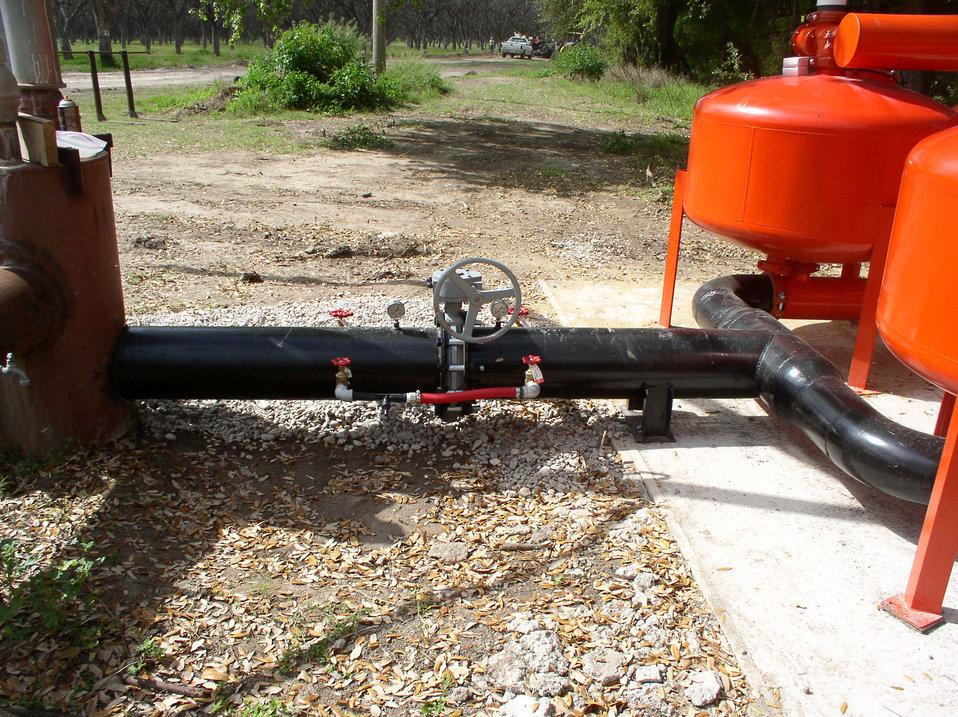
Arrowhead Farms of Zavala County, TX, now draws water from either the Nueces River (on other side of nearby trees) or deep water wells (brown pipes), either of which are filtered through sand tanks and pumped to the tree roots on Tuesday, April 6, 2010. Sediment free water is essential because, it will flow through various automated pressure and flow control valves, pipes, tubing and finally out emitters that drip water out of tiny holes at a rate of 1 gallon/hr. Each tree has several emitters under its drip line and over a typical 24 hour watering period will get just the right amount of water to survive Texas temperatures as best as possible. The farm has been owned by Mr. Akram Mohammad, a pecan farmer since 2005. The 719-acre farm with 10,000 trees, features some orchards with underground micro irrigation system that feeds water to the roots of 4,380 pecan trees on 146 acres. Mr. Mohammad said, “USDA (U.S. Department of Agriculture) was essential to my business and trees surviving the recent exceptional drought. The trees were stress free thanks to underground micro-irrigation. This is essential to the future growth of Texas agriculture and good for America.” U.S. Department of Agriculture’s (USDA) Environmental Quality Initiative Program (EQIP) awarded Mr. Mohammad a $130,000 grant in 2008. He provided $26,000 for the balance of the $156,000 total cost to install a 146-acre underground micro-irrigation for 4,380 trees.